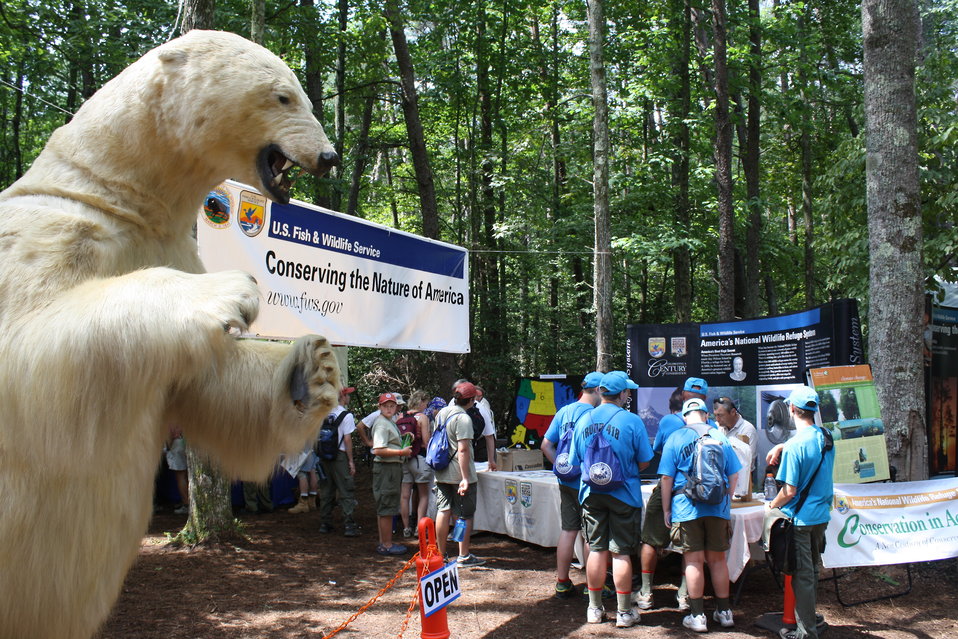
Boy Scout Jamboree 2010